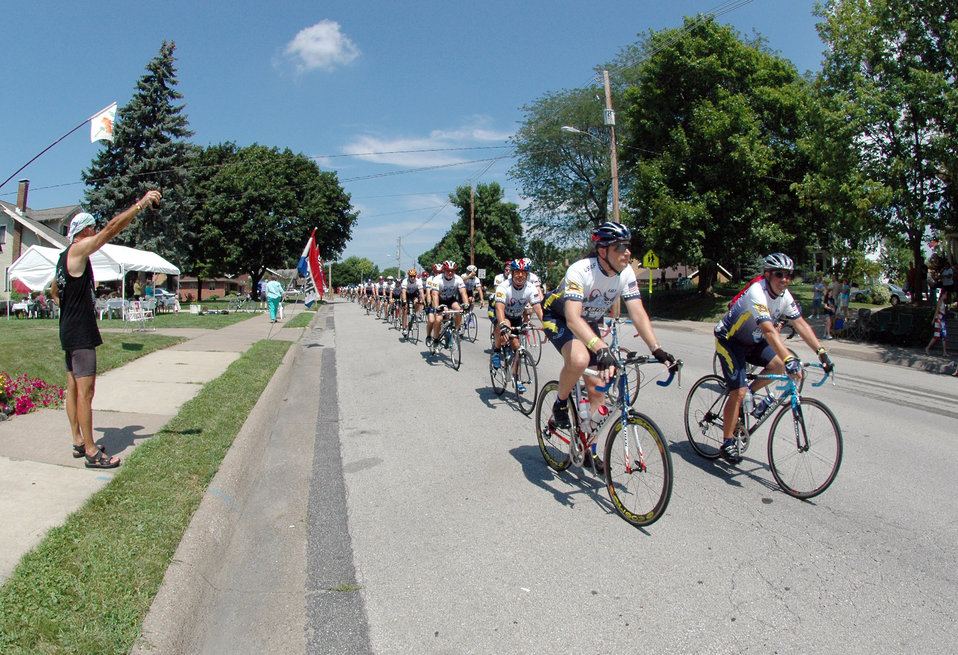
Air Force cycling team wraps up RAGBRAI

A two-column formation of Team Air Force rolls into Muscatine, Iowa, on July 29, led by William Anderson, assistant secretary of the Air Force for installations, environment and logistics, and Tech. Sgt. Richard Rue, the team's executive ride director. Members of the team, along with 10,000 other cyclists, dipped their front tire into the Mississippi River, completing the final leg of the more than 450-mile Des Moines Register's Annual Great Bike Ride Across Iowa.